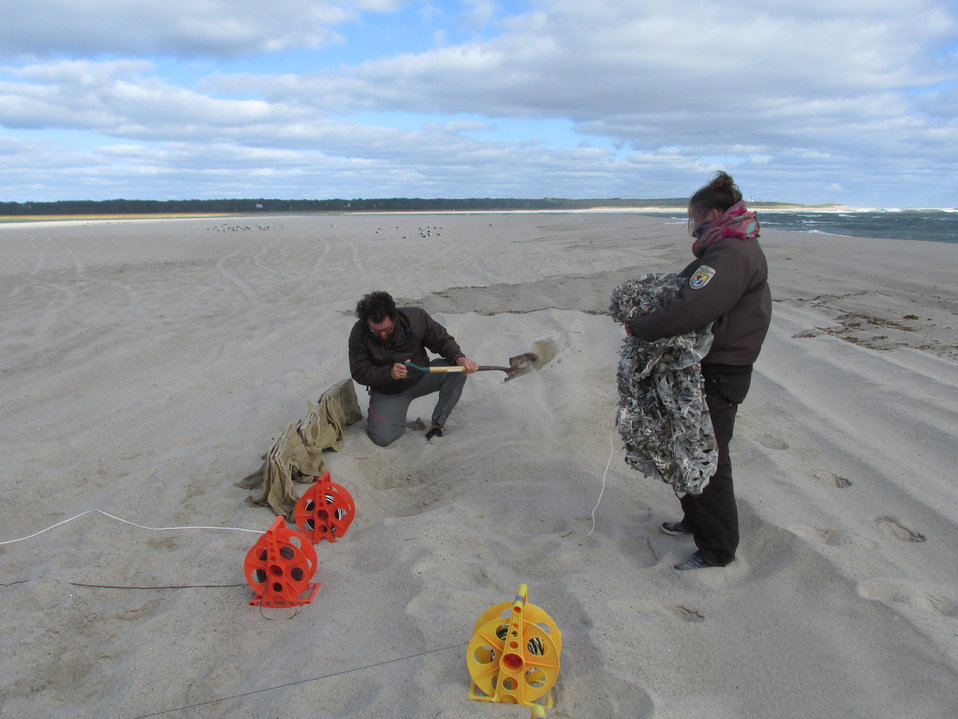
Red knot cannon netting in Cape Cod

Ellison Orcutt with MassAudubon and Carly Congdon with Monomoy National Wildlife Refuge prepare the area where they will hide and wait to set off the cannons.